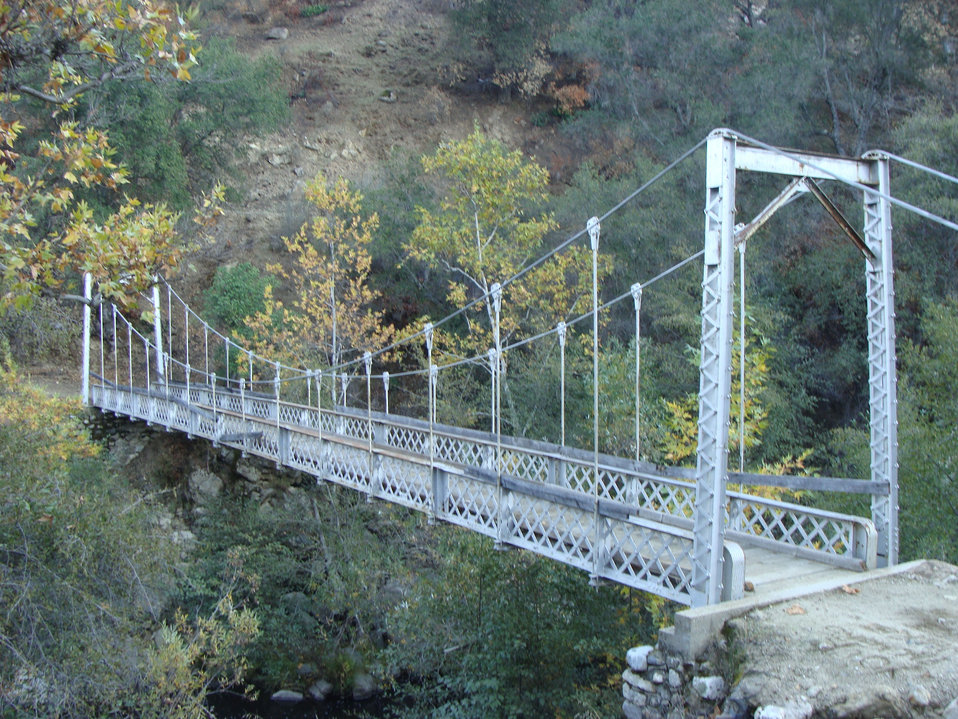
Horse Bridge on Marble Peak Trail, Ventana Wilderness, in the Los Padres National Forest, in Monterey County, CA.